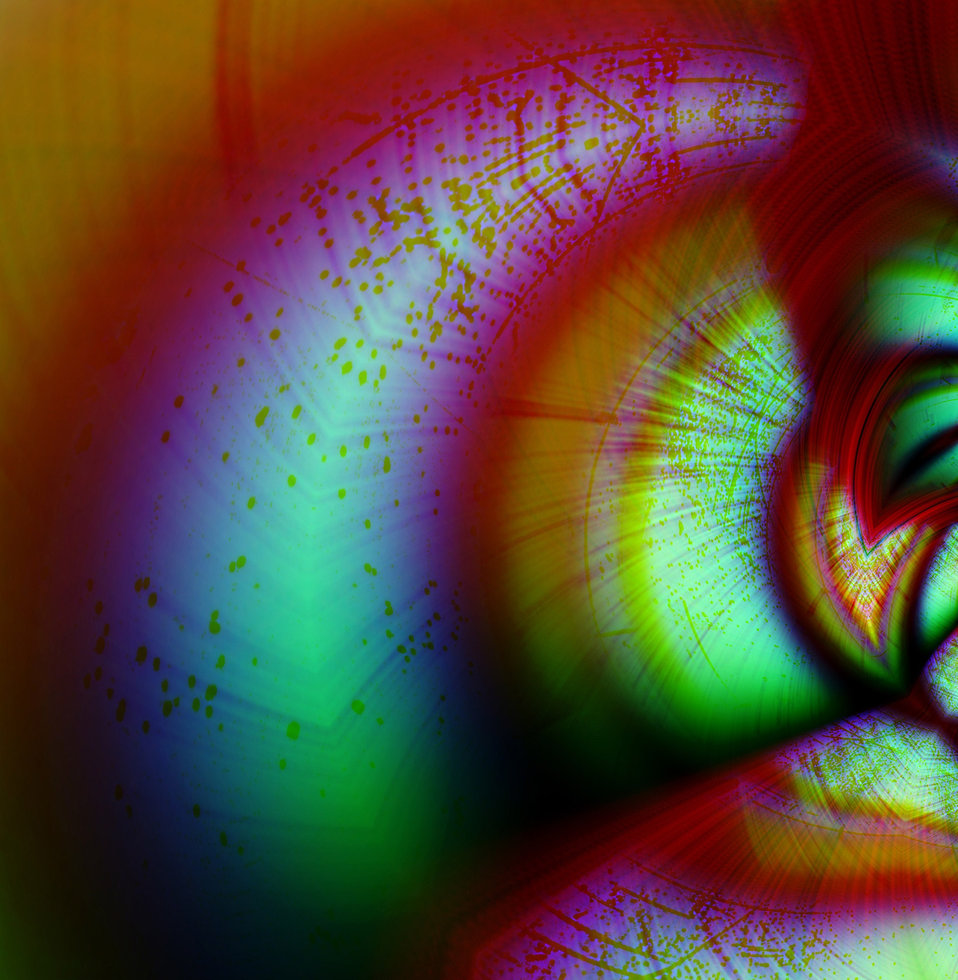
Summer views

Background.